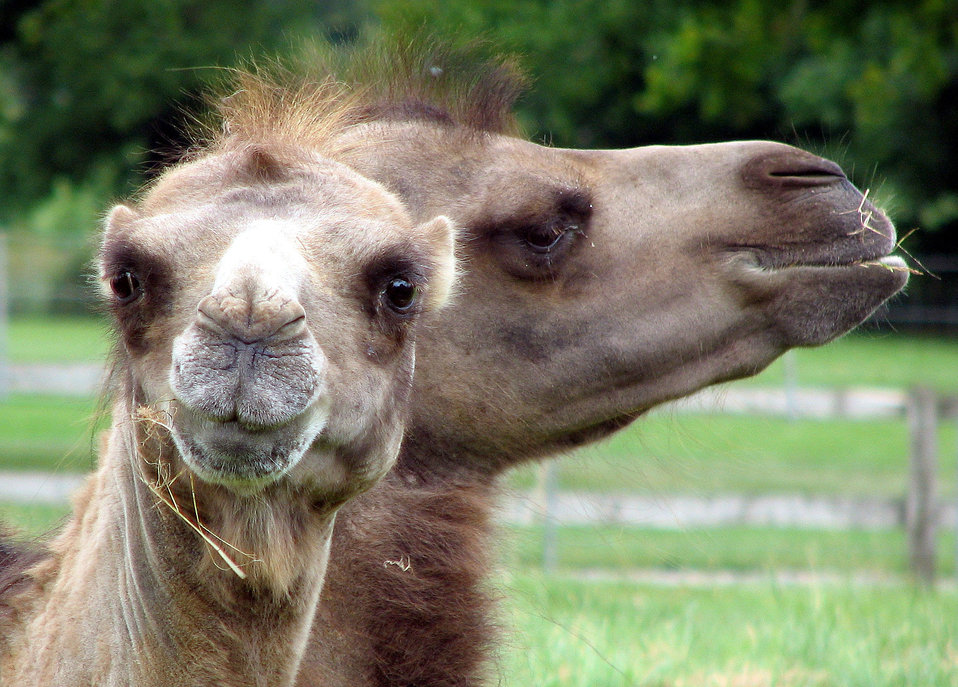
Bactrian.camel.twice.arp